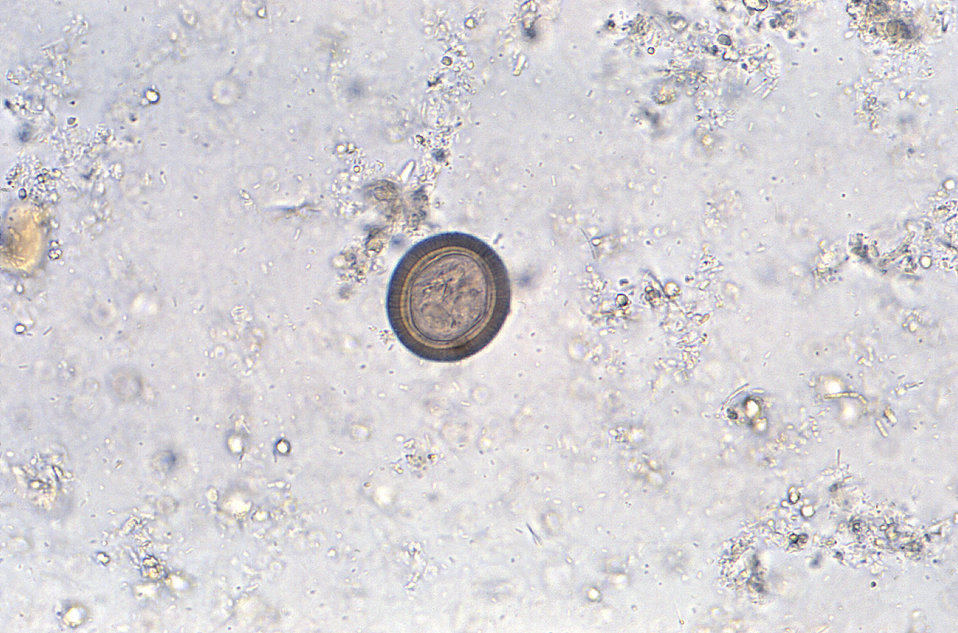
Under a relatively high magnification of 400X, this photomicrograph depicted some of the ultrastructural details exhibited by a Taenia sp. ovum, i.e., egg.